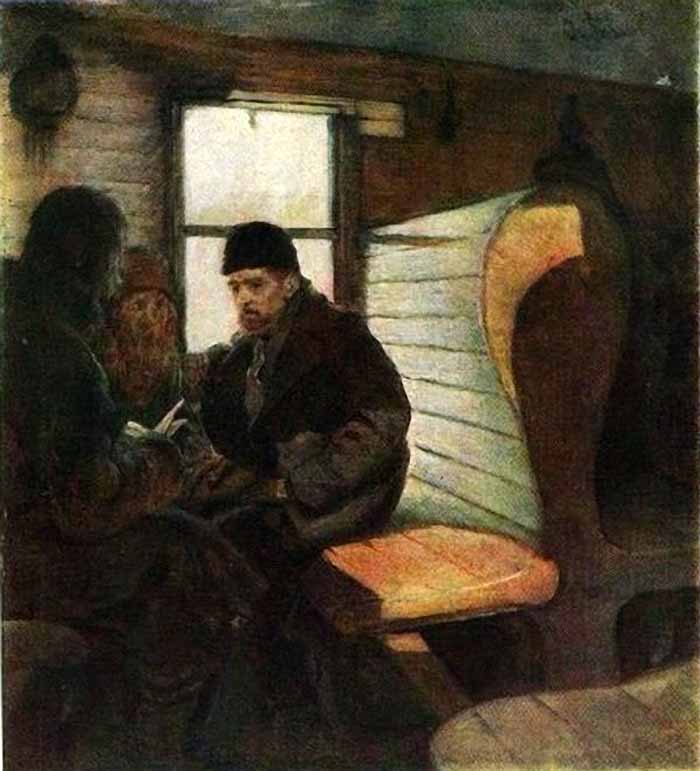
Agitator in the wagon by S.V. Ivanov (1886)